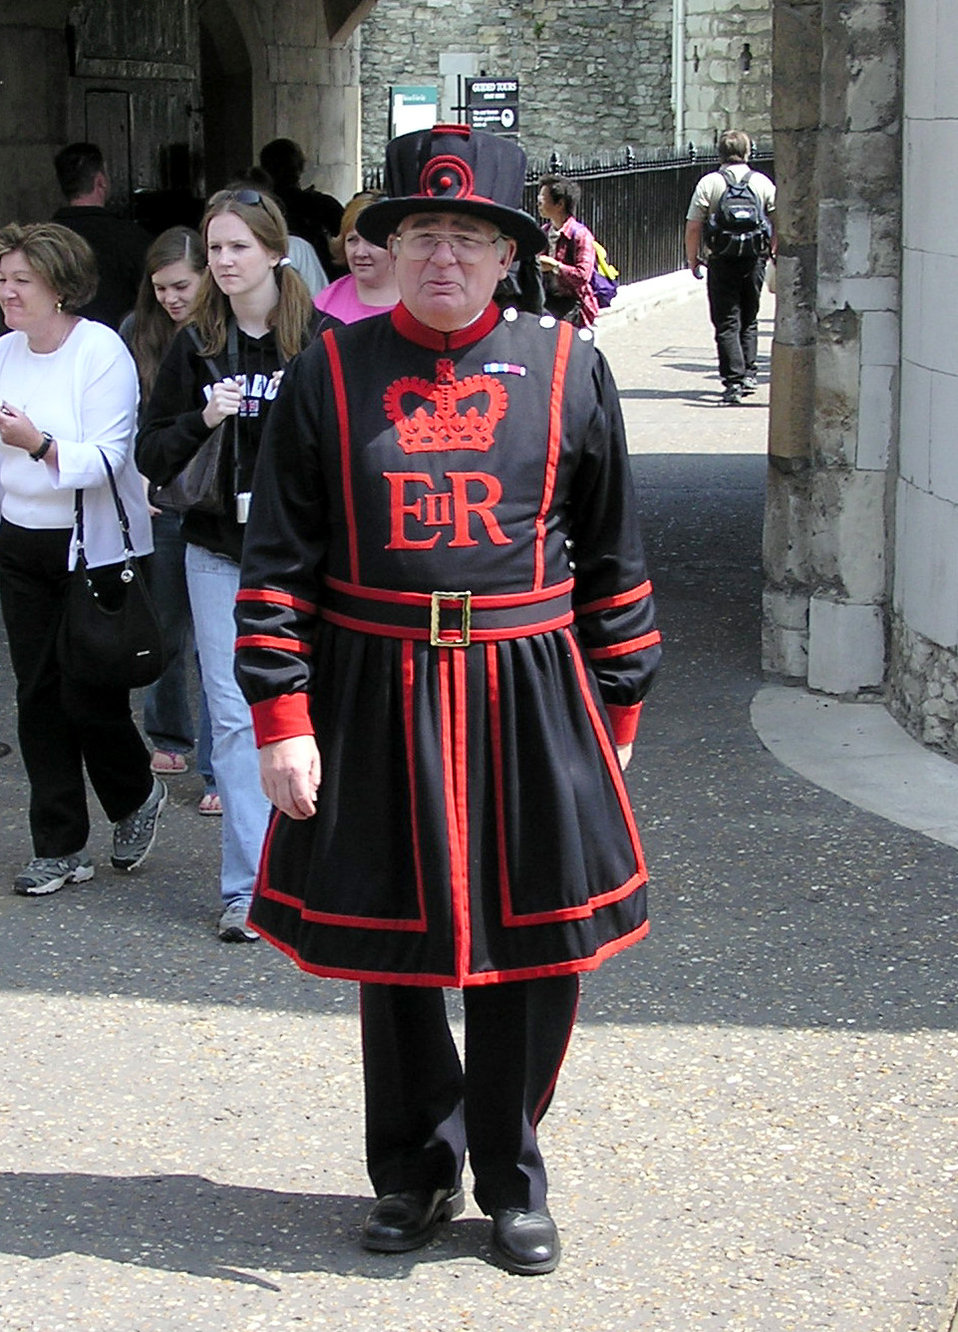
Yeoman.warder.toweroflondon.arp